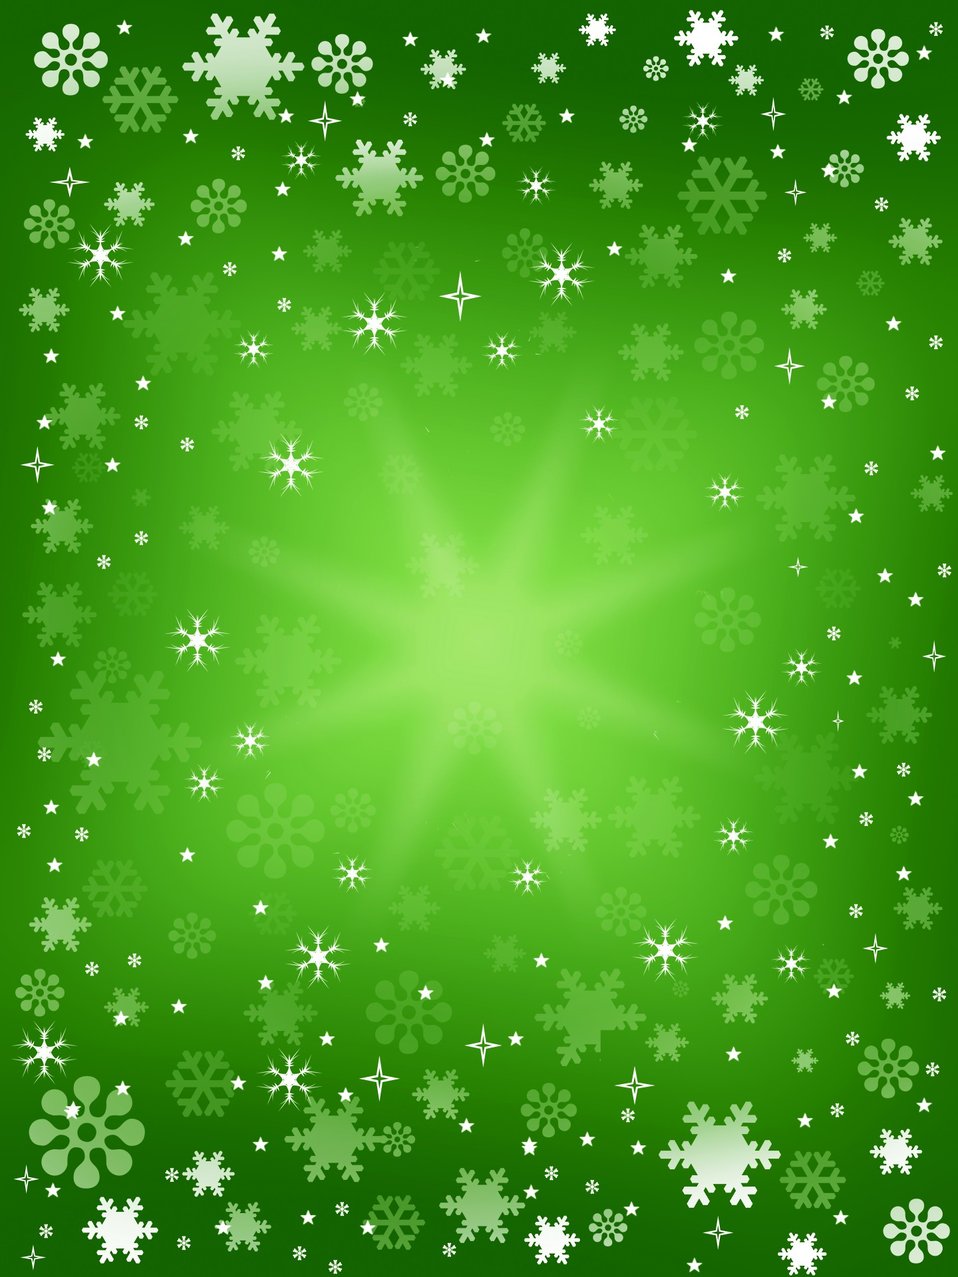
Green winter background

Winter background with snowflakes and stars.